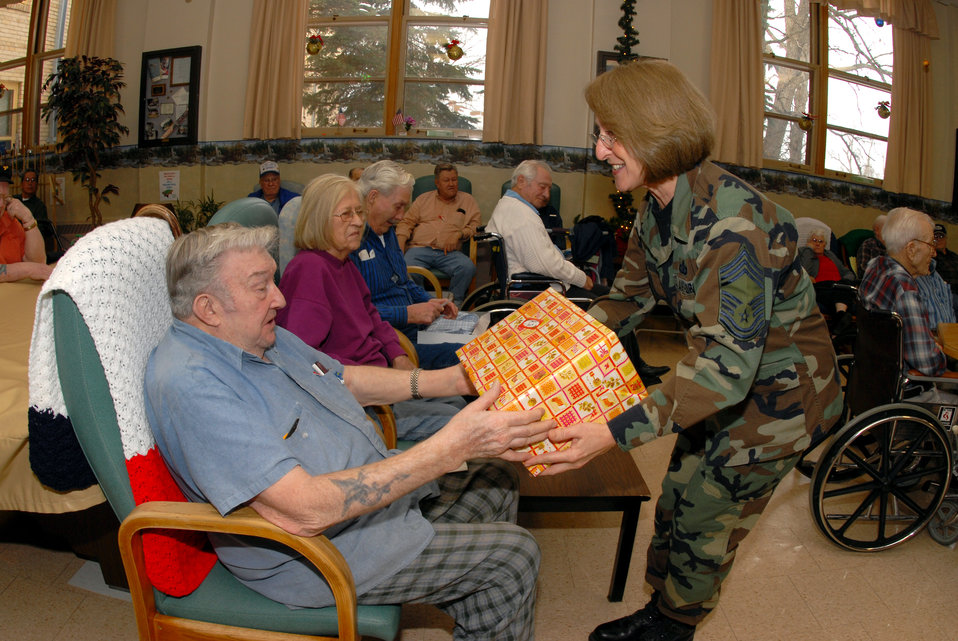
Sharing the Christmas spirit

Chief Master Sgt. Paula K. Johnson gives Army veteran Charles Beck a Christmas gift Dec. 19 during her visit to the North Dakota Veterans Nursing Home in Lisbon, N.D. Gifts are given to veterans at the nursing home each year by Airmen from the North Dakota National Guard.